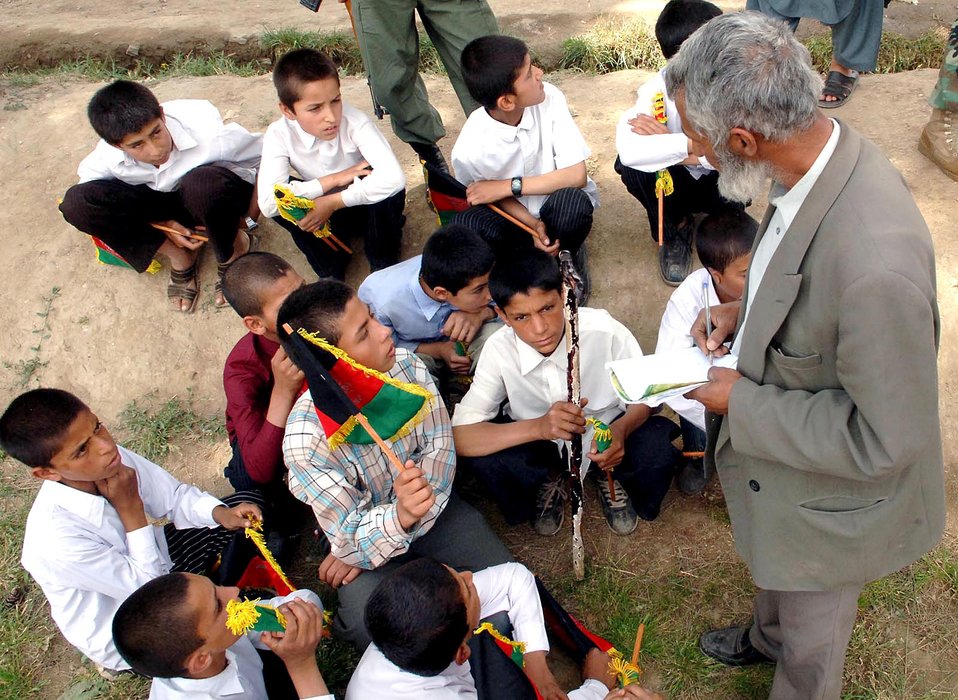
From ashes, rubble rose a school

A Noman High School teacher gives last-minute instructions to the boys choir before it performs at the grand opening of its new school in Parwan Province, Afghanistan, on Friday, May 26, 2006.